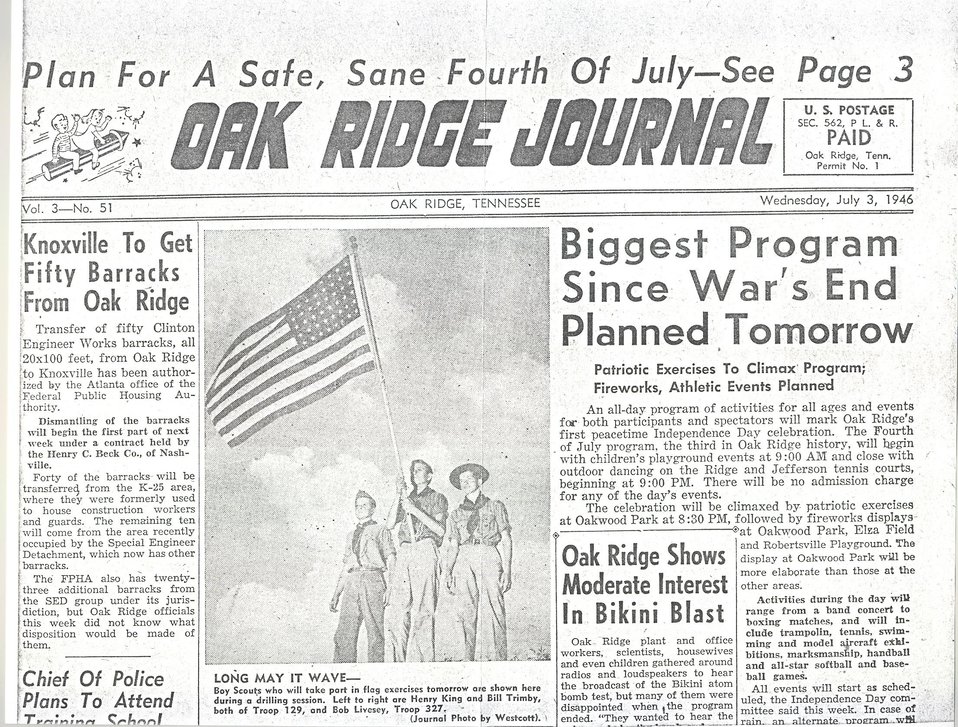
Oak Ridge Journal Picture of Boy Scouts Holding American Fl